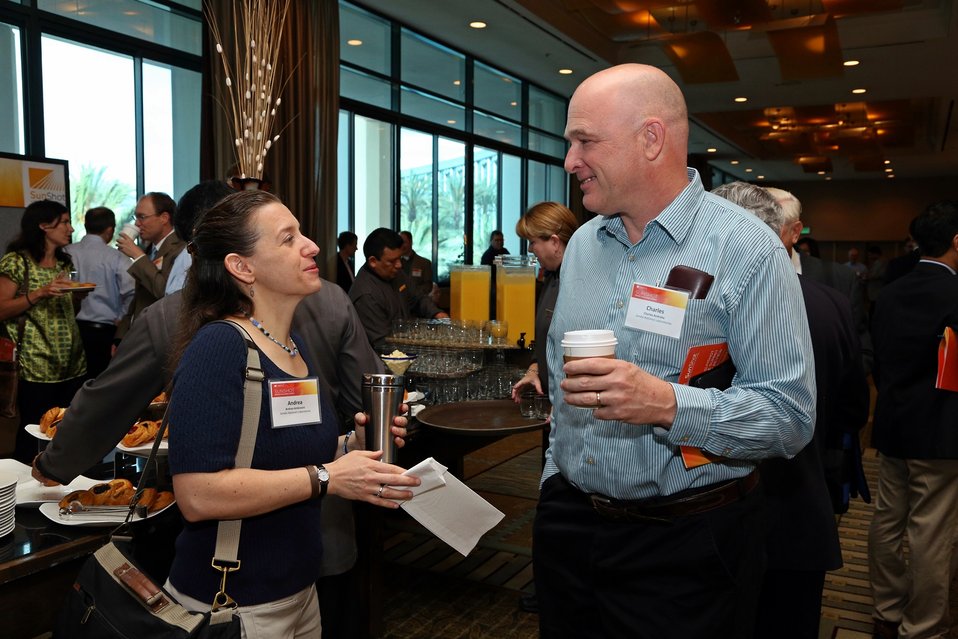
Day 2 SunShot Summit Breakfast

Attendees enjoy conversation over breakfast before day 2 gets underway.